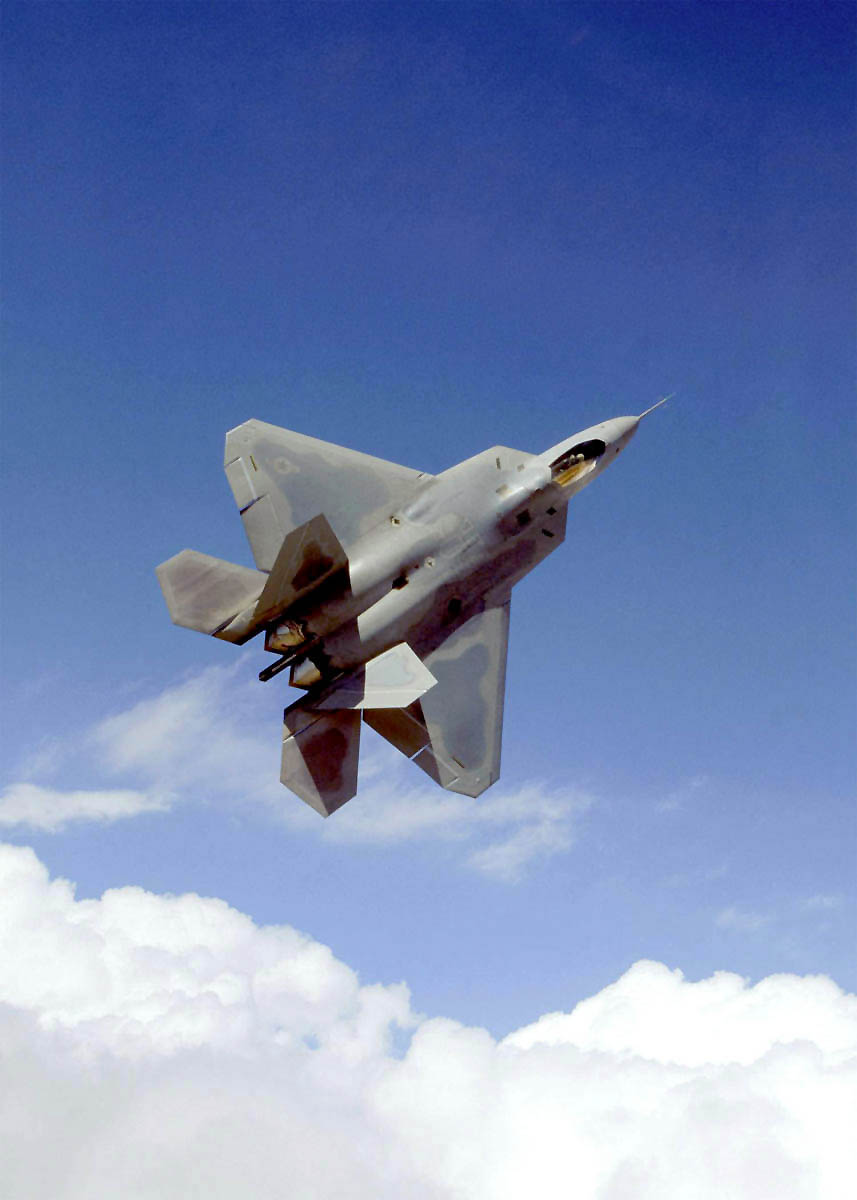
Blue skies Raptor

FILE PHOTO -- The F/A-22 is an air-superiority fighter with improved capability over current Air Force aircraft. From the inception of the battle, the F/A-22's primary objective will be to establish air superiority through the conduct of counter air operations. The F/A-22 also has an inherent air-to-surface capability. A combination of improved sensor capability, improved situational awareness, and improved weapons provides first-kill opportunity against the threat.